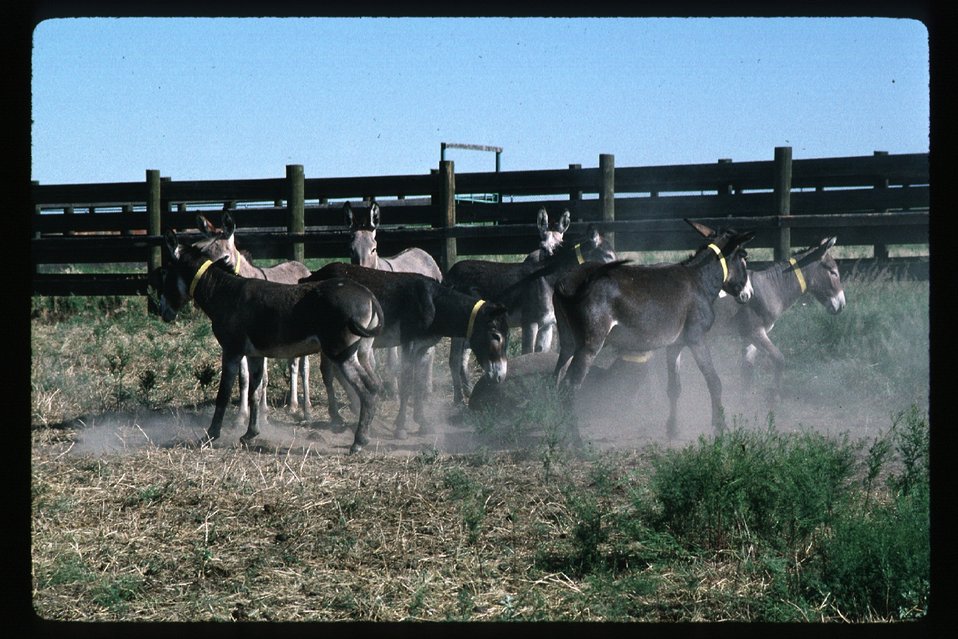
Wild Horse and Burro Adoption Program Gathering Roundup Corral Four Rivers Field Office LSRD Lower Snake River District